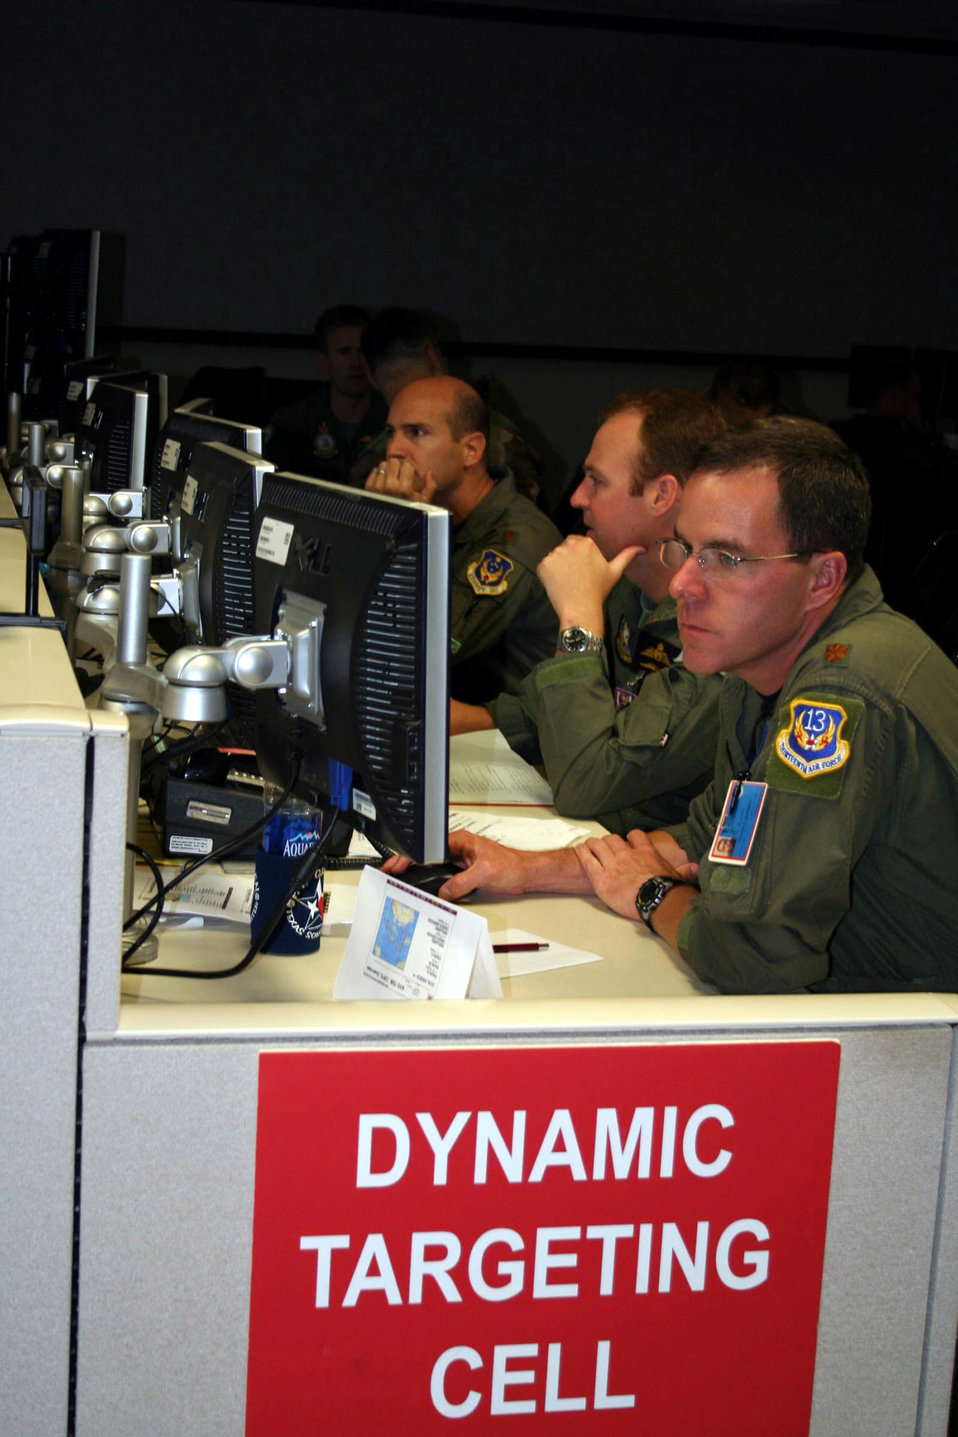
Exercise brings Australian, U.S. forces together

Maj. Chris Bonney, Royal Australian Air Force Flight Lt. Leo Lochran and Maj. Paul Arbizzani together in the Dynamic Targeting Cell on the Air Operations Center operations floor during Talisman Saber '07 May 24 at Hickam Air Force Base, Hawaii. Majors Bonney and Arbizzani are assigned to the 613th Air and Space Operations Center Combat Operations Division.